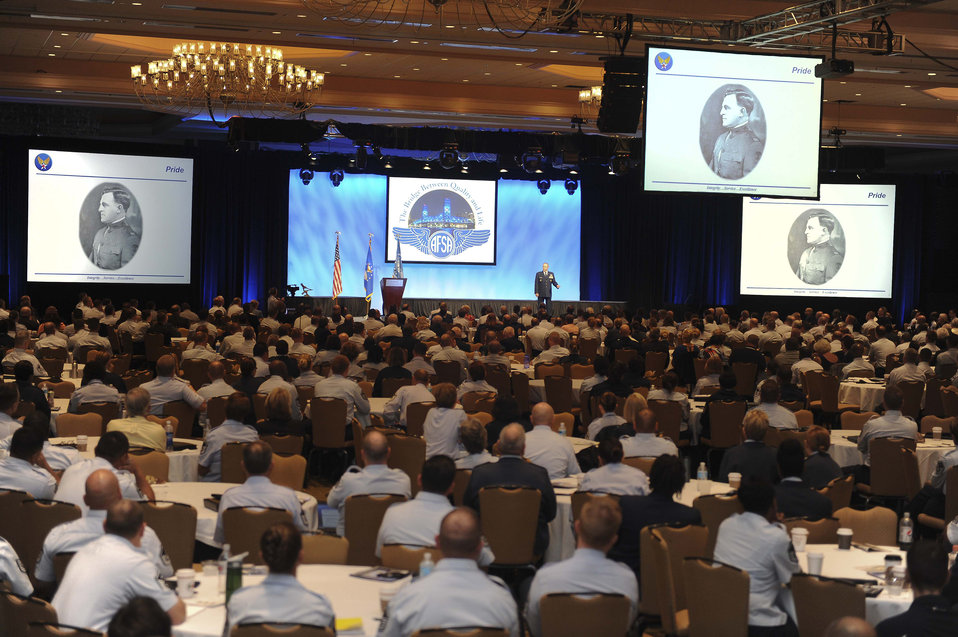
CSAF talks leadership

Air Force Chief of Staff Gen. Mark A. Welsh III shares his senior leadership perspective at the Air Force Sergeants Association Professional Airmen's Conference in Jacksonville, Fla., Aug. 15, 2012. During his speech, Welsh emphasized the role leaders play in Airmen's lives, as well as the importance of leaders getting to know their Airmen.